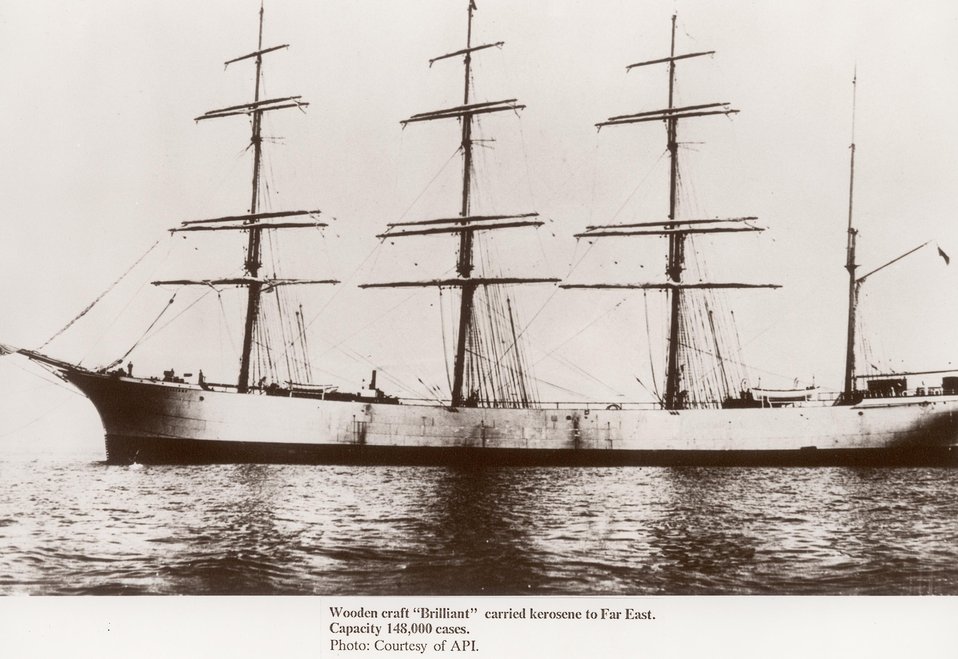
Wooden craft 'Brilliant' carried kerosene to the far east.